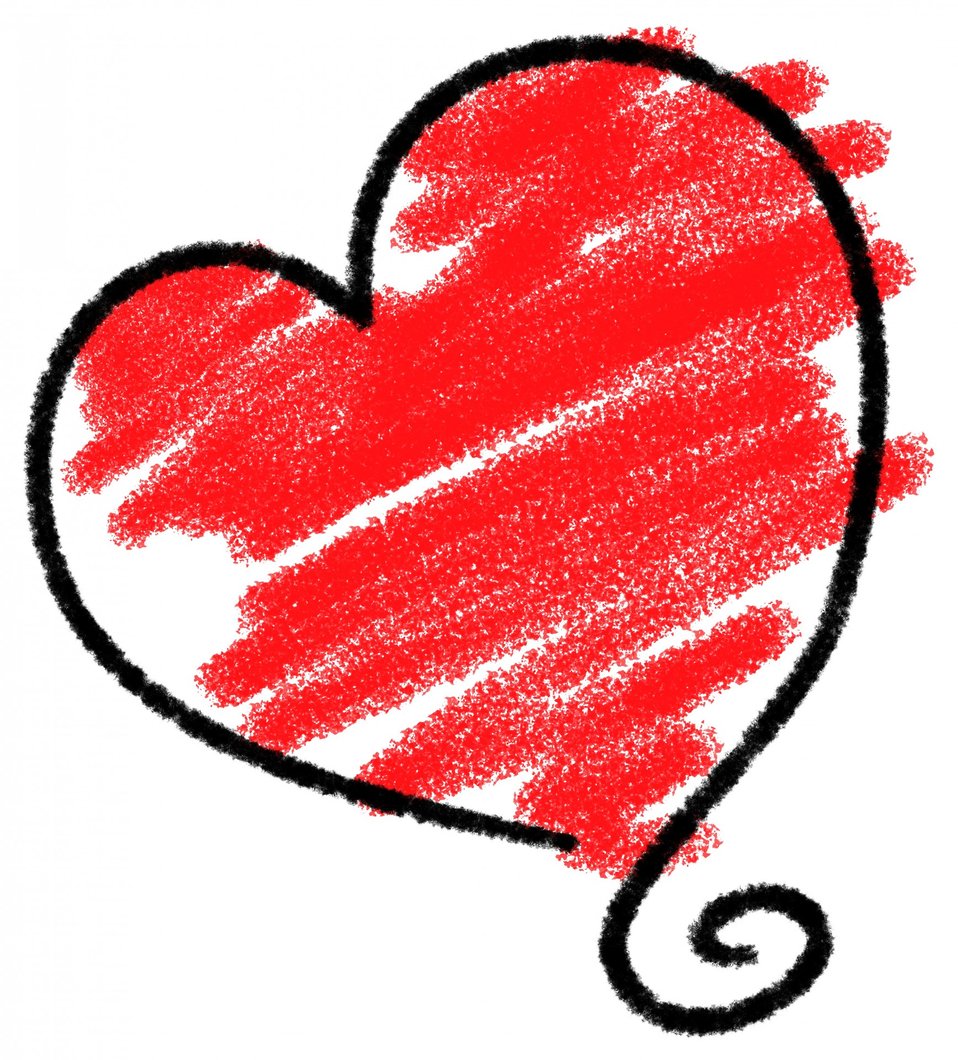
Sketched heart

Digitally created sketched red heart shape..